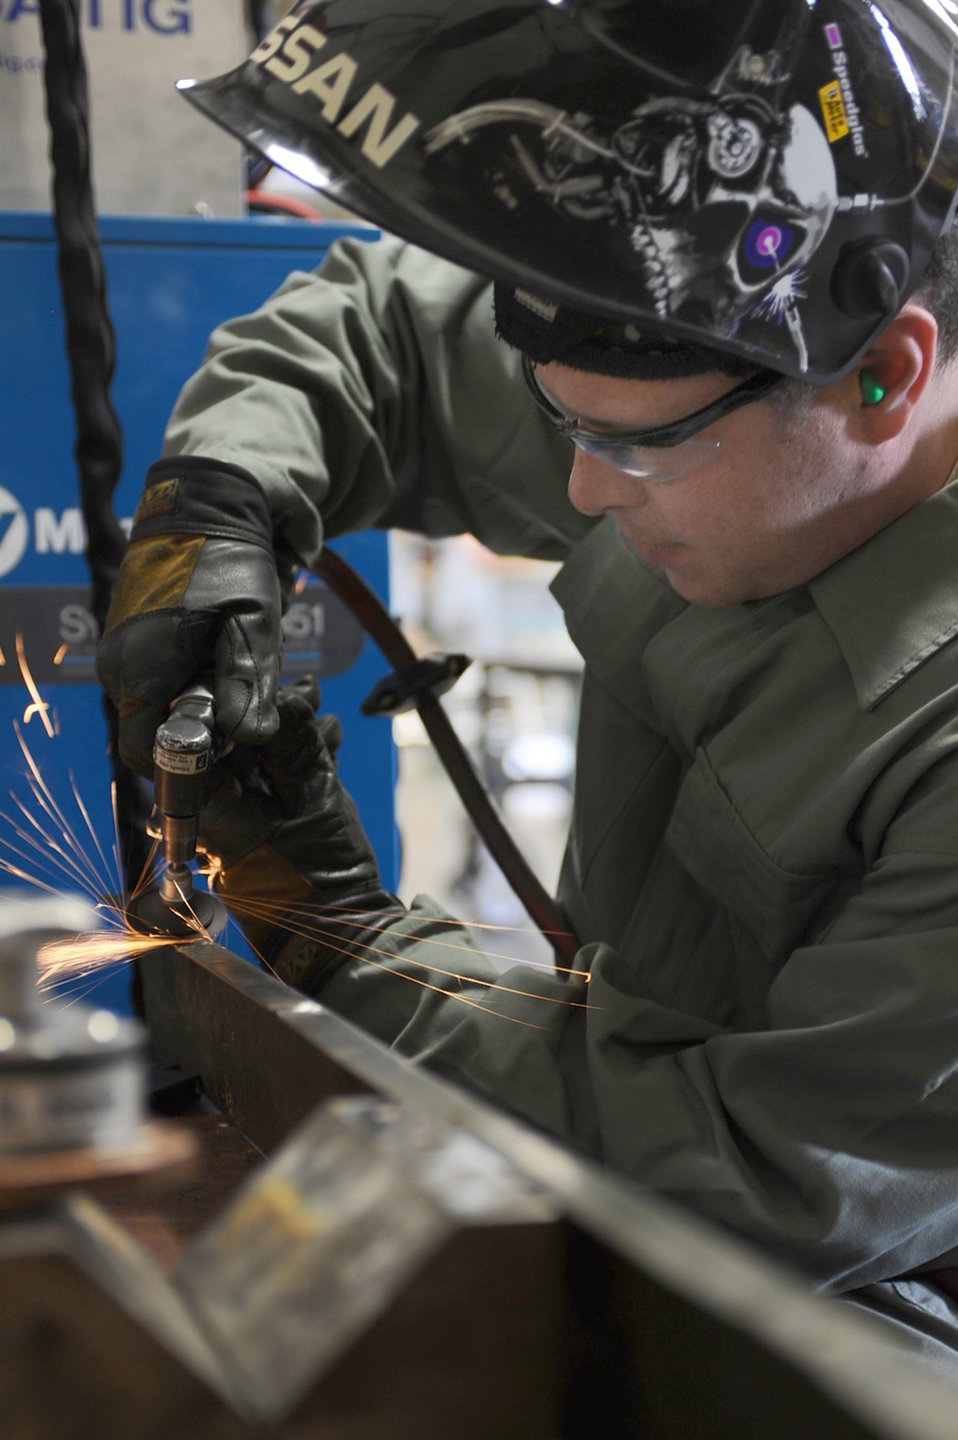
Tungsten inert-gas welding

Airman 1st Class Webb Travis prepares a bomb loader panel for drilling by smoothing out the welds Jan. 26, 2011, at Ellsworth Air Force Base, S.D. Airman Travis is an aircraft metals technology technician assigned to the 28th Maintenance Squadron.